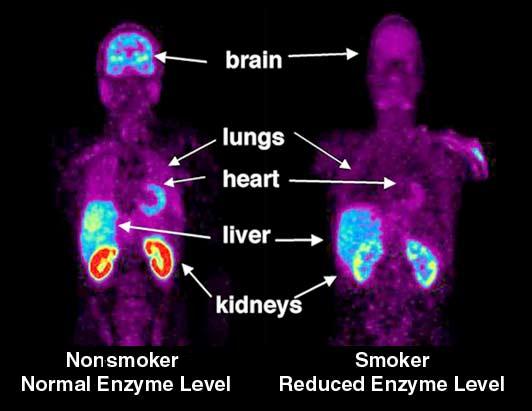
PET scan - Smoking

PET scans illustrate the distribution of the enzyme MAO-B in a nonsmoker and smoker.